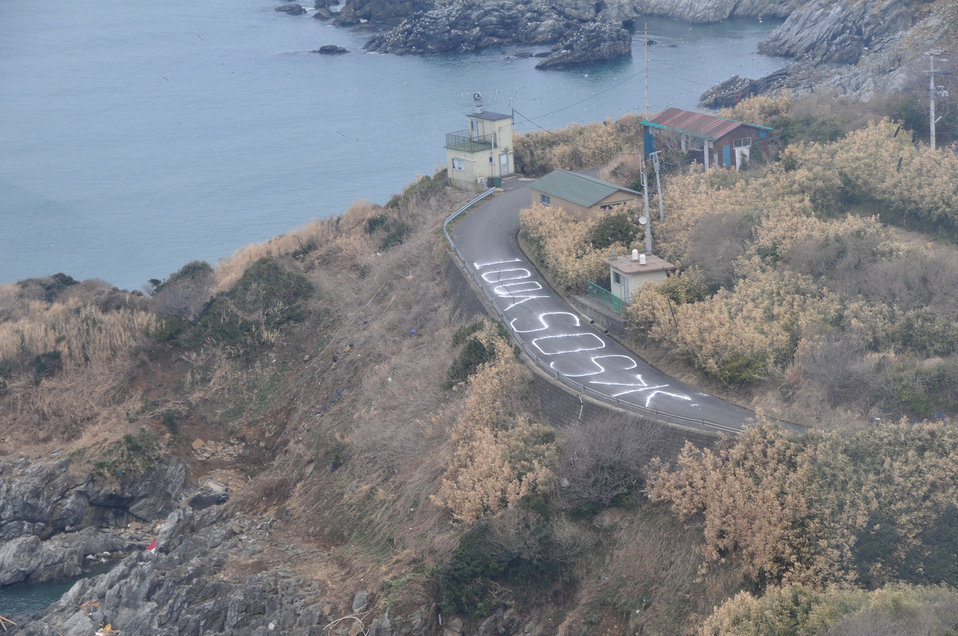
Search and rescue

An Air Force search and rescue team in an HH-60 G Pave Hawk helicopter surveys the damage as it flies over a coastal roadway in northeastern Japan.